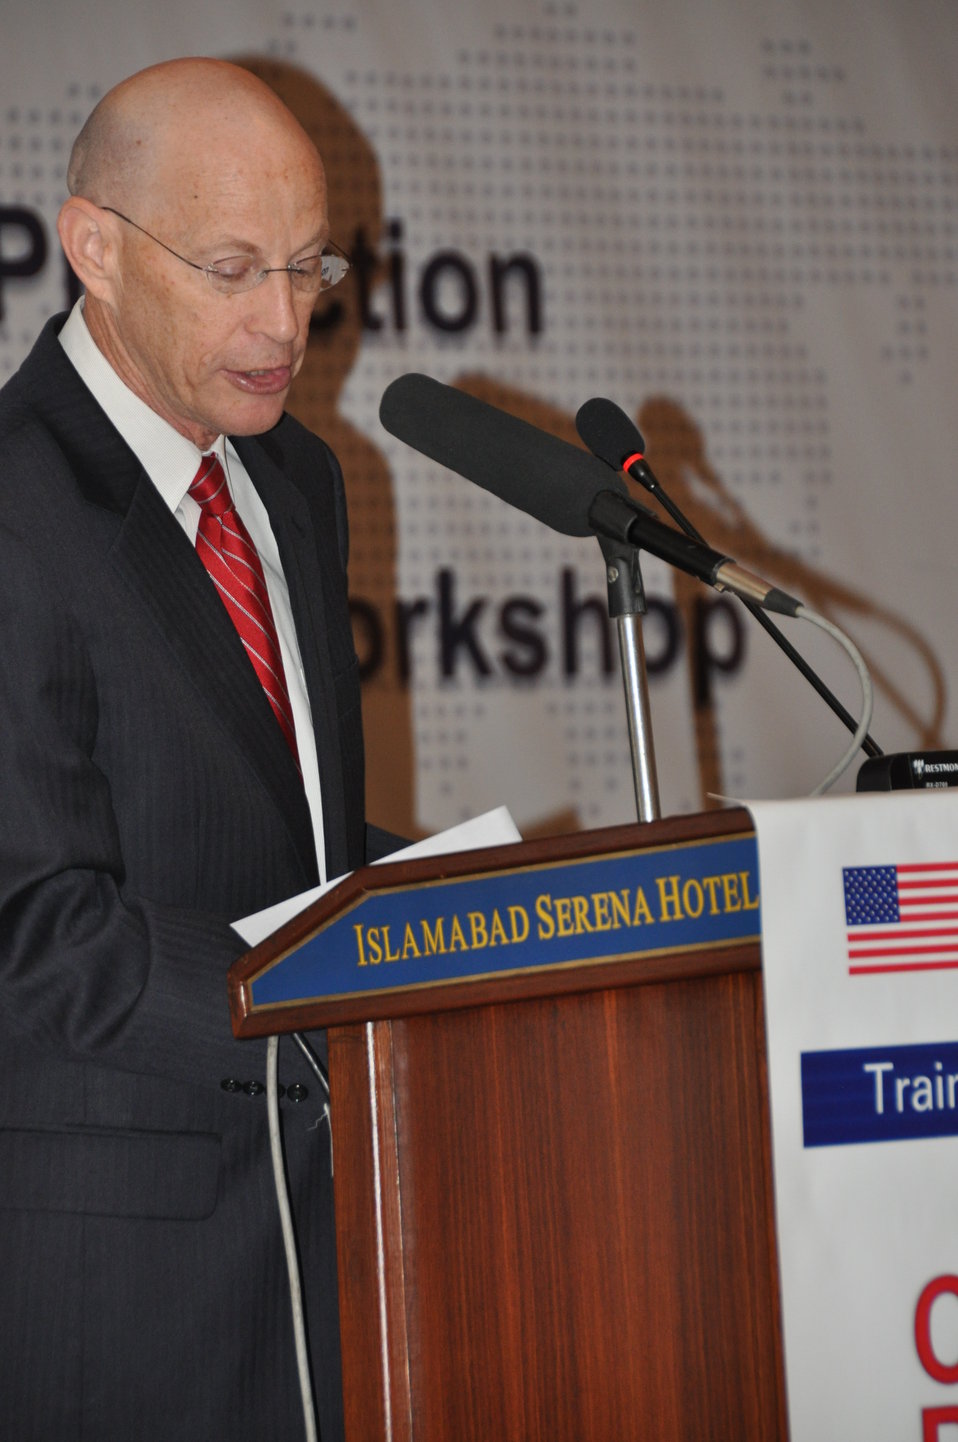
Consumer Protection and Financial Literacy workshop 04

USAID supported study to build public confidence in financial institutions; encourage savings and long-term investments